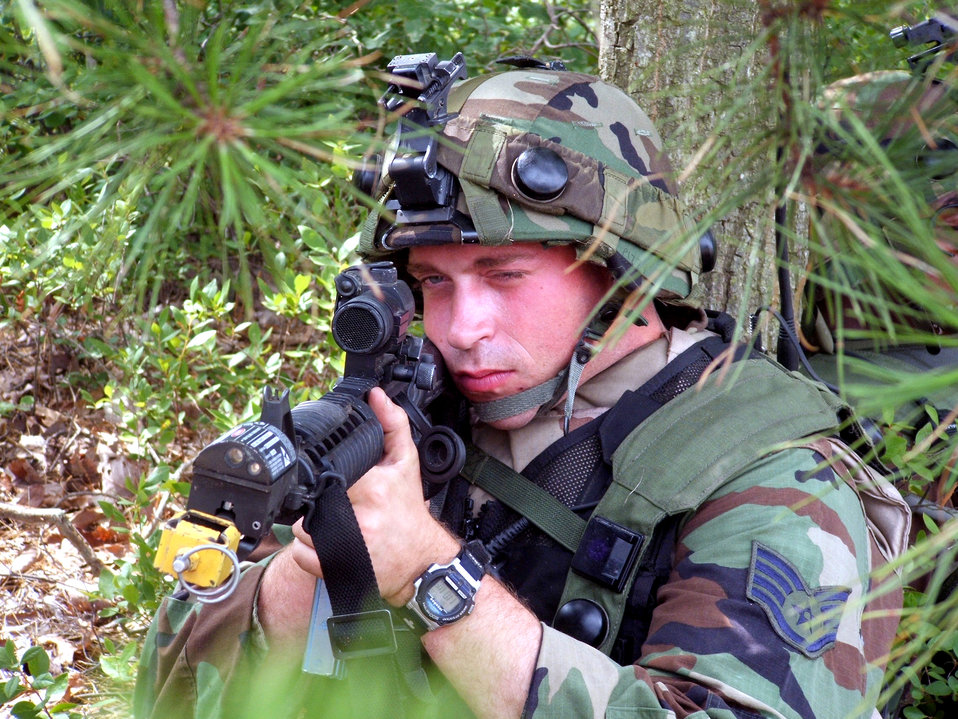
Eagle Flag

Staff Sgt. Nic Pizzi watches over a perimeter area during operations for exercise Eagle Flag 06-3 at Naval Air Engineering Station Lakehurst, N.J., on Saturday, July 15. The exercise is the only flag-level exercise that tests Airmen from multiple Air Force specialties on their expeditionary combat support skills. The exercise is coordinated by the Air Mobility Warfare Center's 421st Combat Training Squadron. Sergeant Pizzi is assigned to the 817th Global Mobility Squadron at McGuire Air Force Base, N.J.